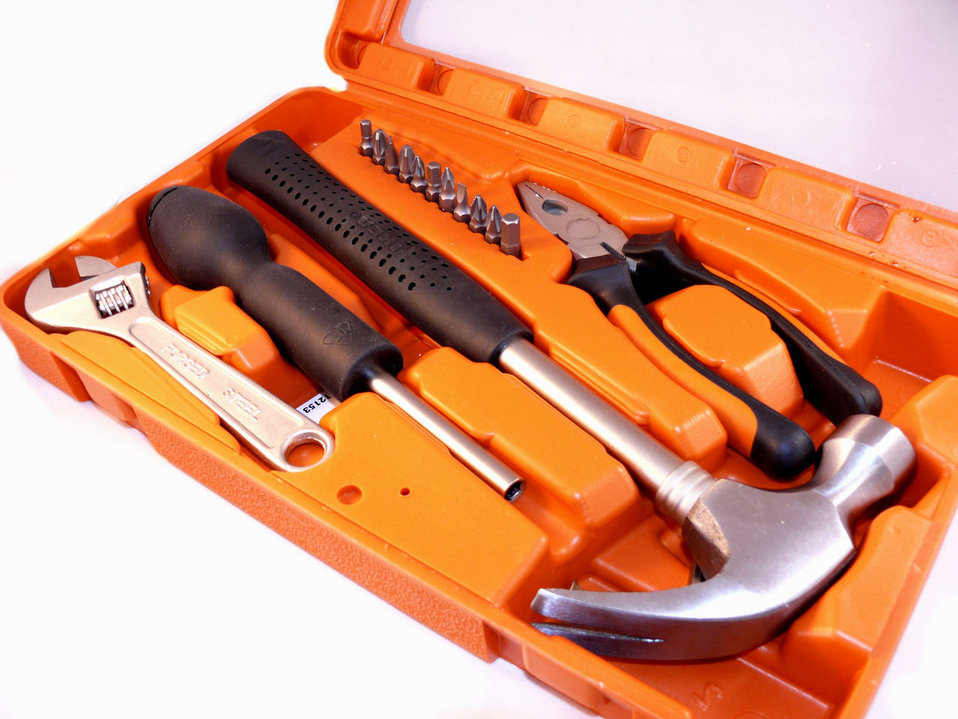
Tool kit on white background.